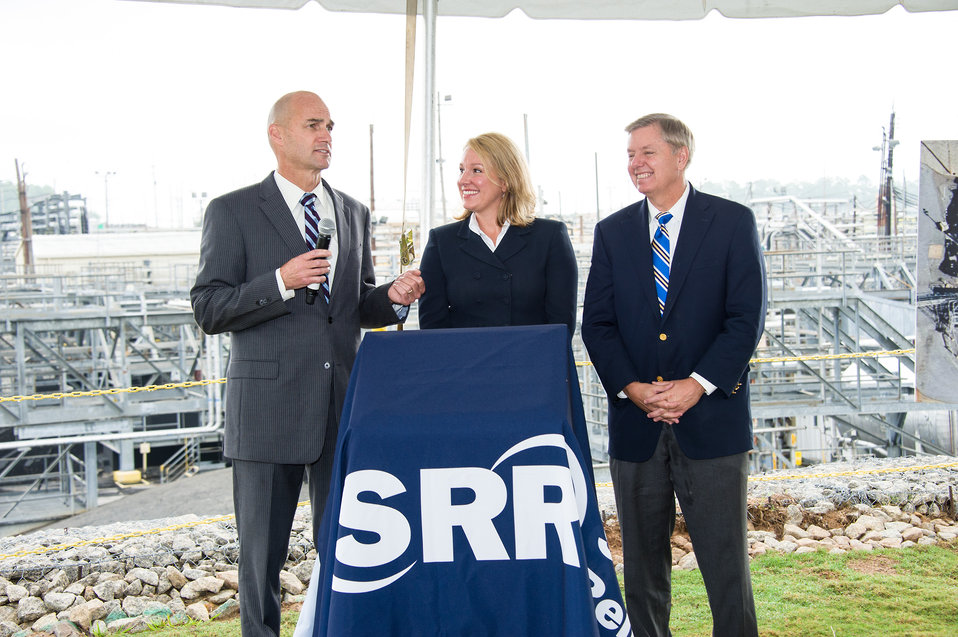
Thomas P. D’Agostino, Undersecretary for Nuclear Security and Administrator, NNSA speaking at the formal tank closure celebration in H Area

Thomas P. D’Agostino, Undersecretary for Nuclear Security & Administrator, NNSA,
South Carolina Department of Health & Environmental Control, Director Catherine Templeton
Senator Lindsey Graham